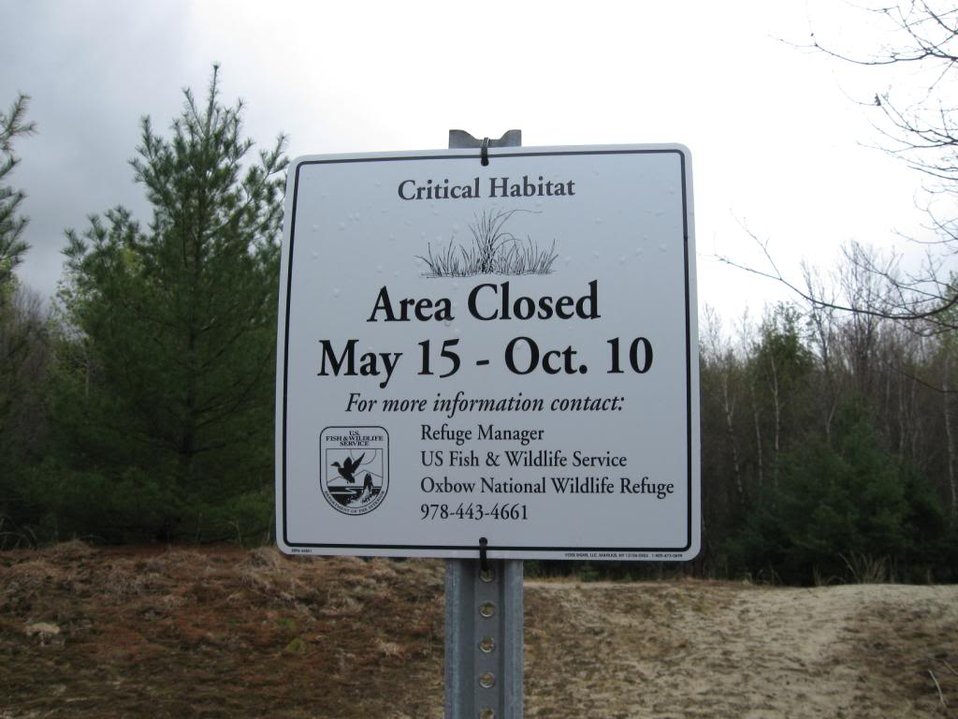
Critical habitat sign at Oxbow National Wildlife Refuge.

Credit: Zachary Cava/USFWS

Oxbow National Wildlife Refuge is part of the Eastern Massachusetts National Wildlife Refuge Complex.